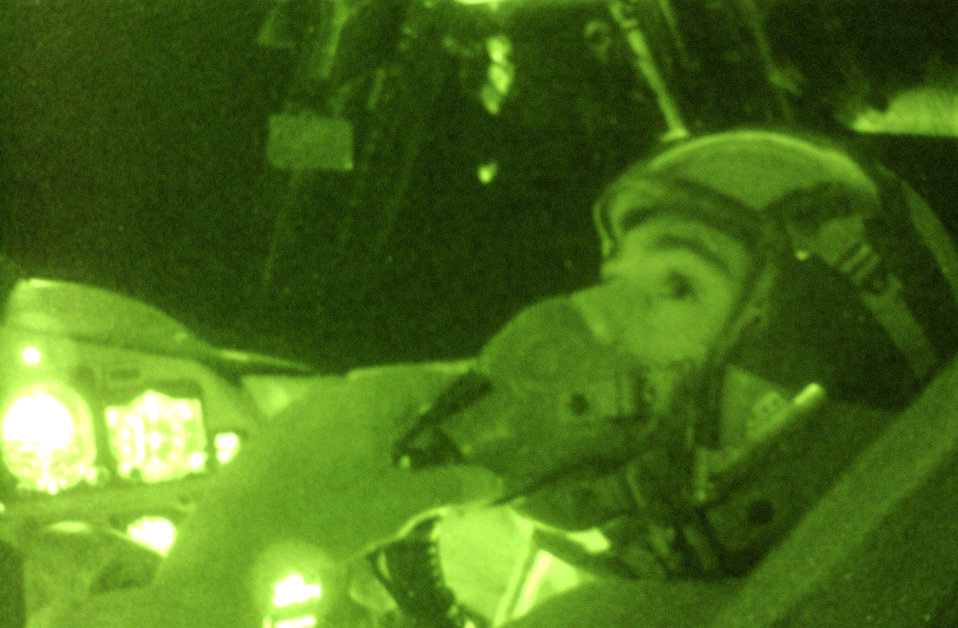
Flight check

OPERATION IRAQI FREEDOM -- 1st. Lt. Darrick Mosley, a B-52 Stratofortress co-pilot with the 40th Expeditionary Bomb Squadron, checks the flight instruments during a bombing mission over Iraq on March 26. Coalitoin aircraft have been flying about 1,500 sorties a day during Operation Iraqi Freedom.